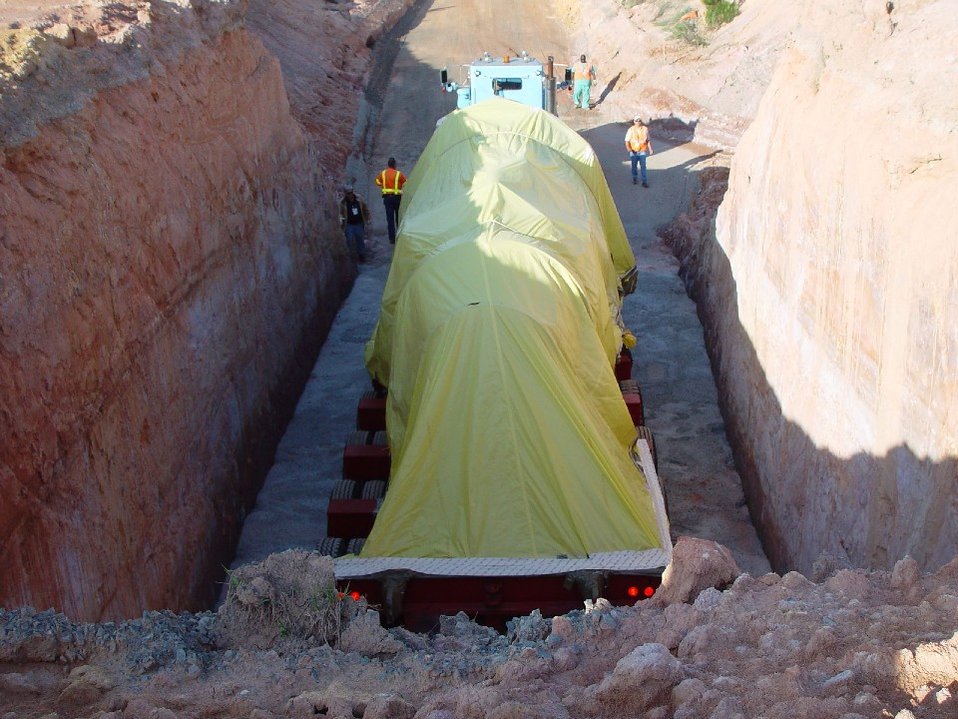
HWCTR PV Disposal, 4-14-11

Recovery Act workers removed the Heavy Water Components Test Reactor vessel, shown here, and permanently disposed it onsite.